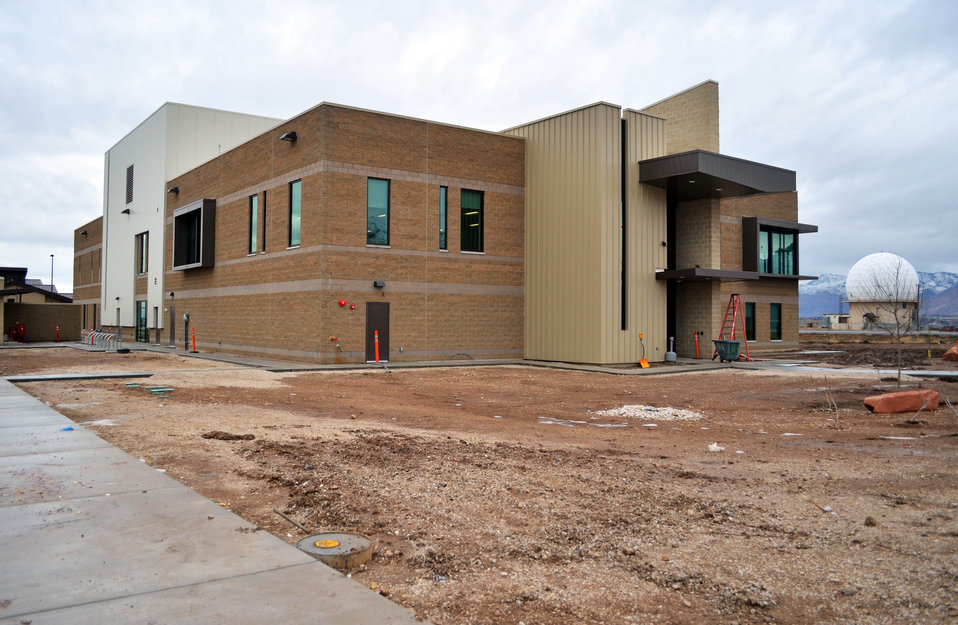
F-22, F-35 aircraft facilities near completion at Hill Air Force Base

Construction is near completion on the new system support facility for the base’s F-22 and F-35 fighter jets at Hill Air Force Base, Utah, shown Feb. 14, 2014. The U.S. Army Corps of Engineers Sacramento District is overseeing construction of the 36,500-square-foot facility, which will serve as an administration and operations support building to the adjacent F-22 and F-35 industrial facilities on base. The facility is scheduled to be complete early 2014.